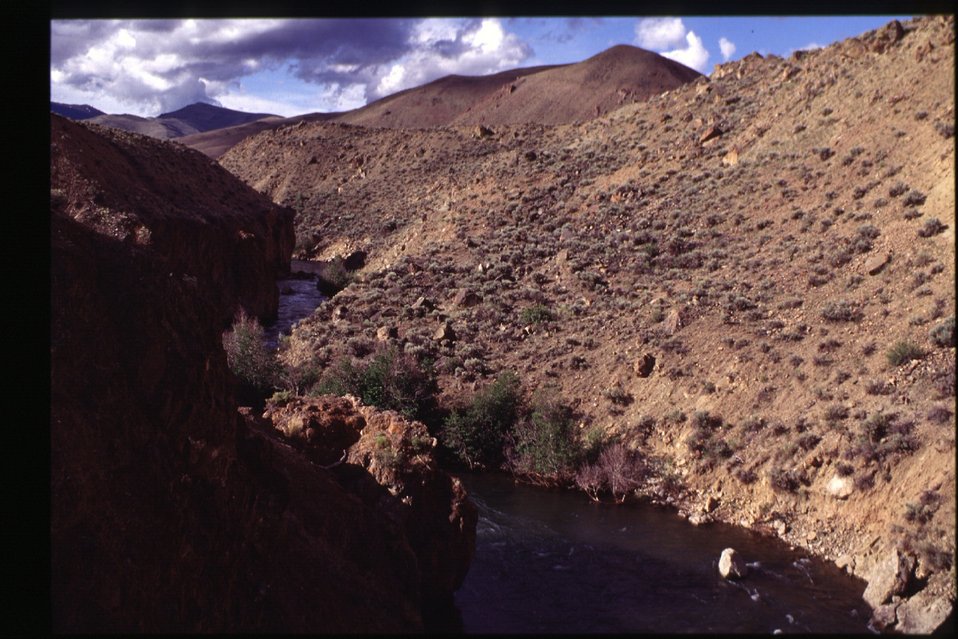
Scenics Salmon Field Office UCSC Upper Columbia Salmon Clearwater District